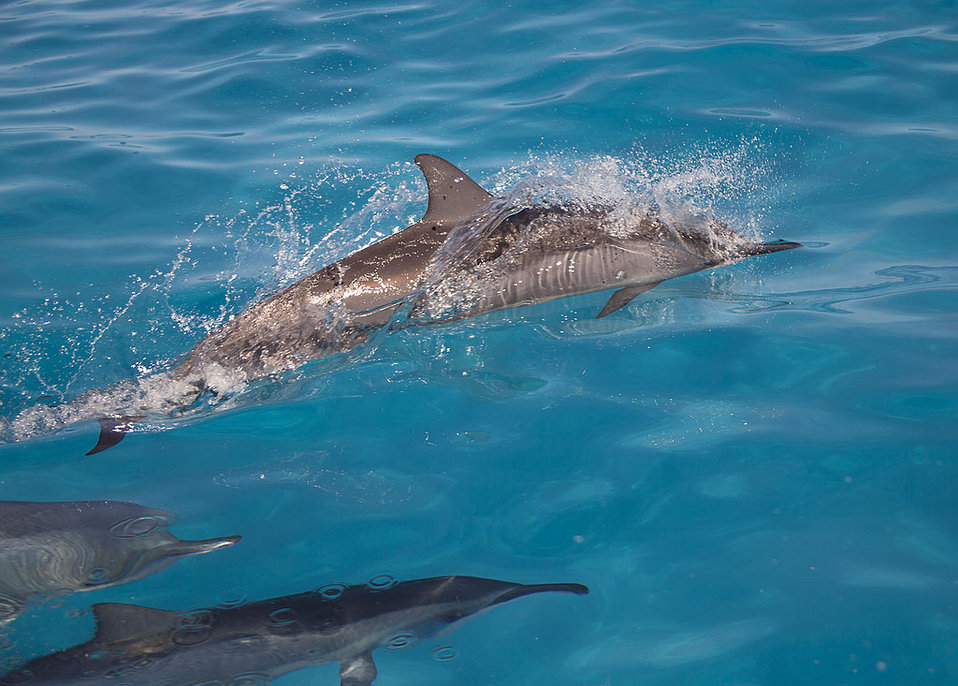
spinner dolphins

Midway Atoll National Wildlife Refuge,
Papahānaumokuākea Marine National Monument
January 2012